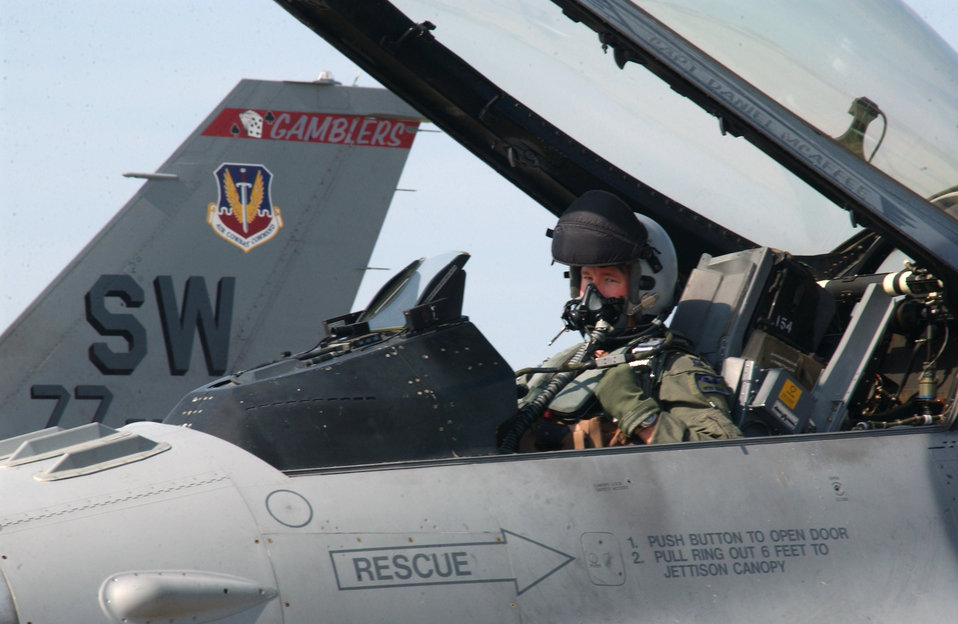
Prepare for launch

A pilot from the 79th Fighter Squadron prepares an F-16 Fighting Falcon for launch in support of an operational readiness exercise March 27 at Shaw Air Force Base, S.C. Exercises prepare Airmen for future deployments.